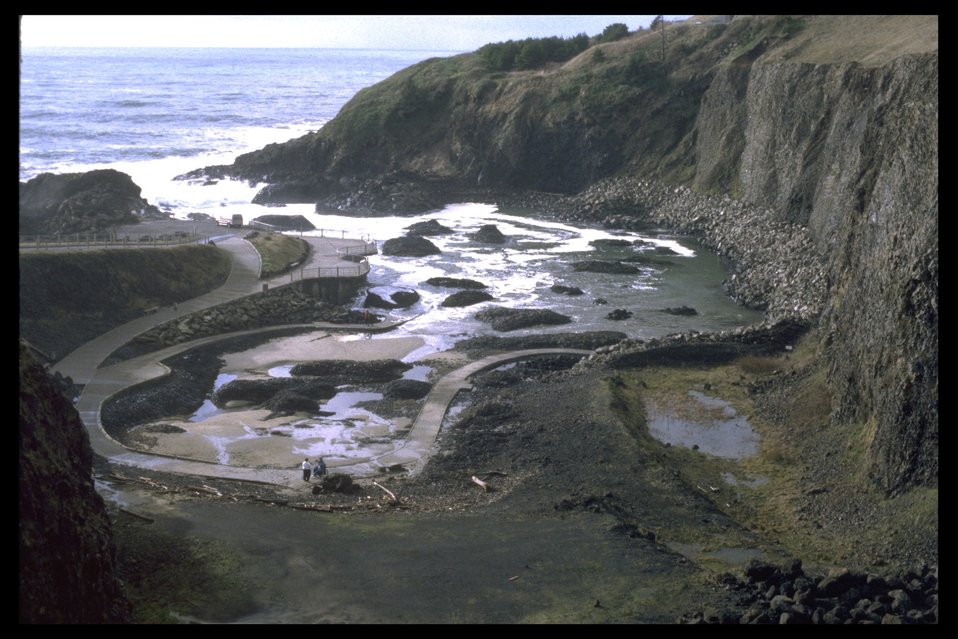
Quarry Cove tidepools.